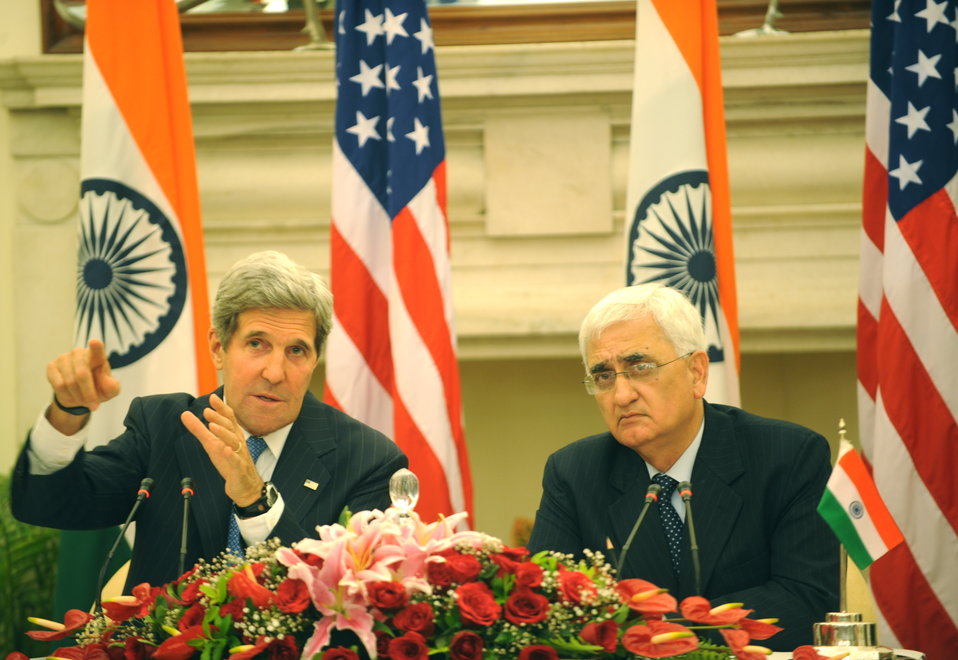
Secretary Kerry Speaks With Indian External Affairs Minister Khurshid During a News Conference

U.S. Secretary of State John Kerry speaks with Indian External Affairs Minister Salman Khurshid during a news conference in New Delhi, India on June 24, 2013.